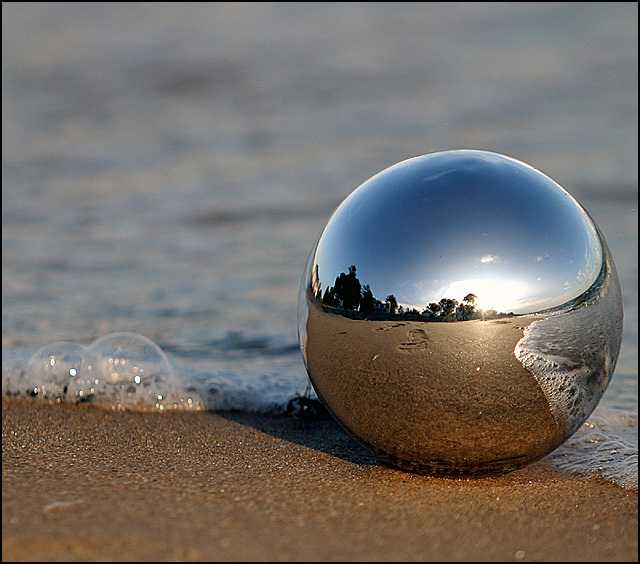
Uploaded by request of Sean Smith.

Taken on Chesapeake Bay.

The reflection shows a footprint that represents that we all have an impact on our environment and a responsibility to preserve it for
futures